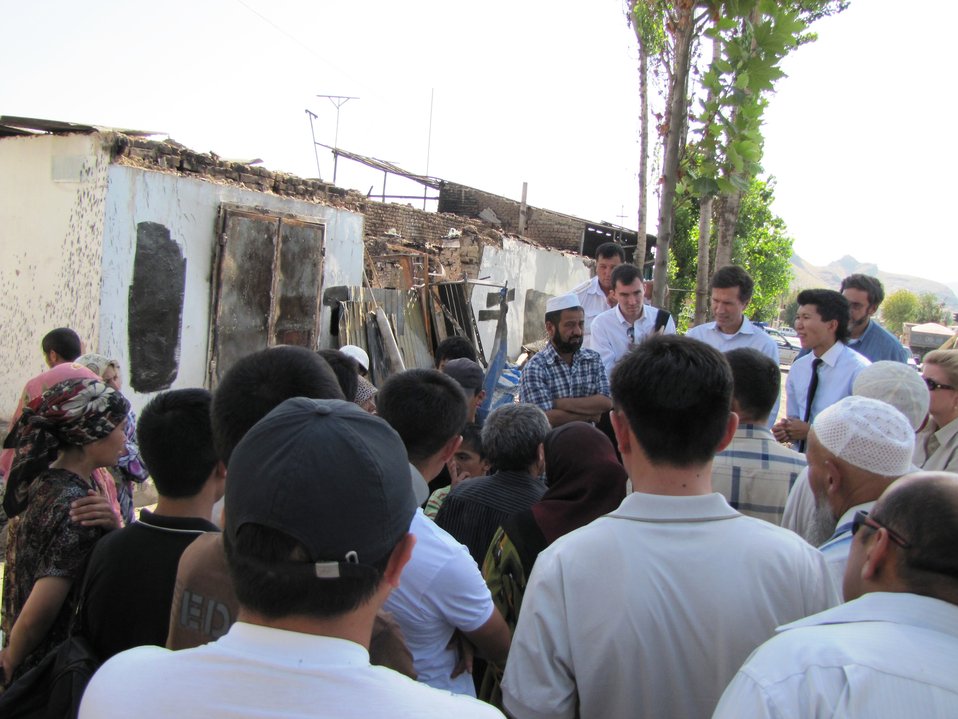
Assistant Secretary Blake Discusses U.S. Assistance

U.S. Assistant Secretary for South and Central Asian Affairs Robert O. Blake discusses U.S. assistance with a group of ethnic Uzbeks next to a block devastated during the mid-June riots in Osh, Kyrgyzstan, on July 19, 2010.